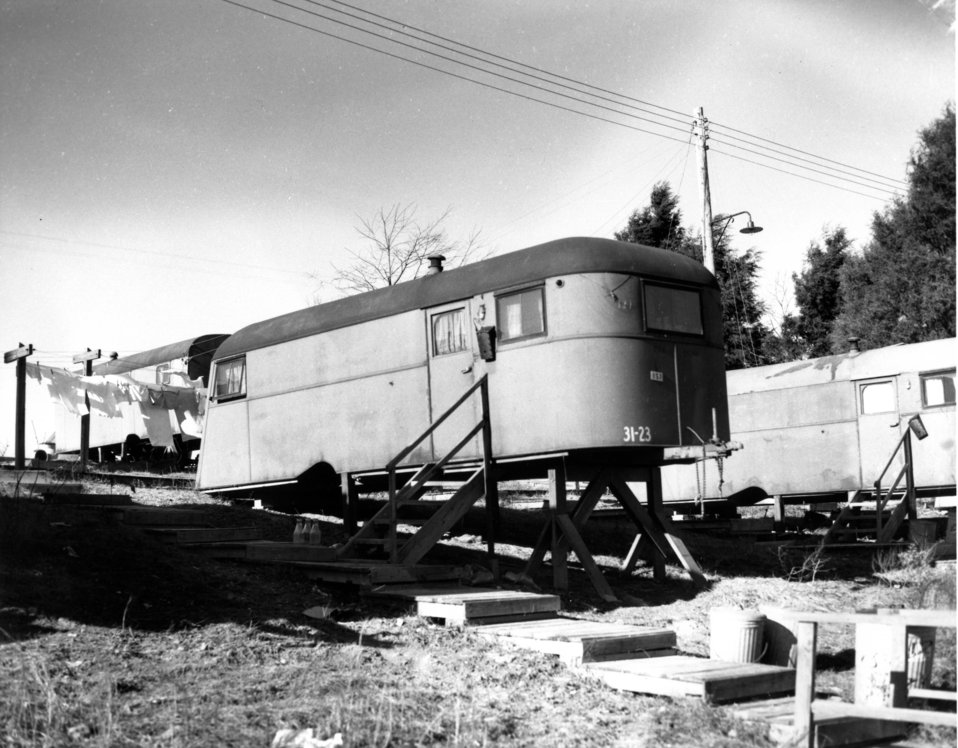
Housing at Oak Ridge